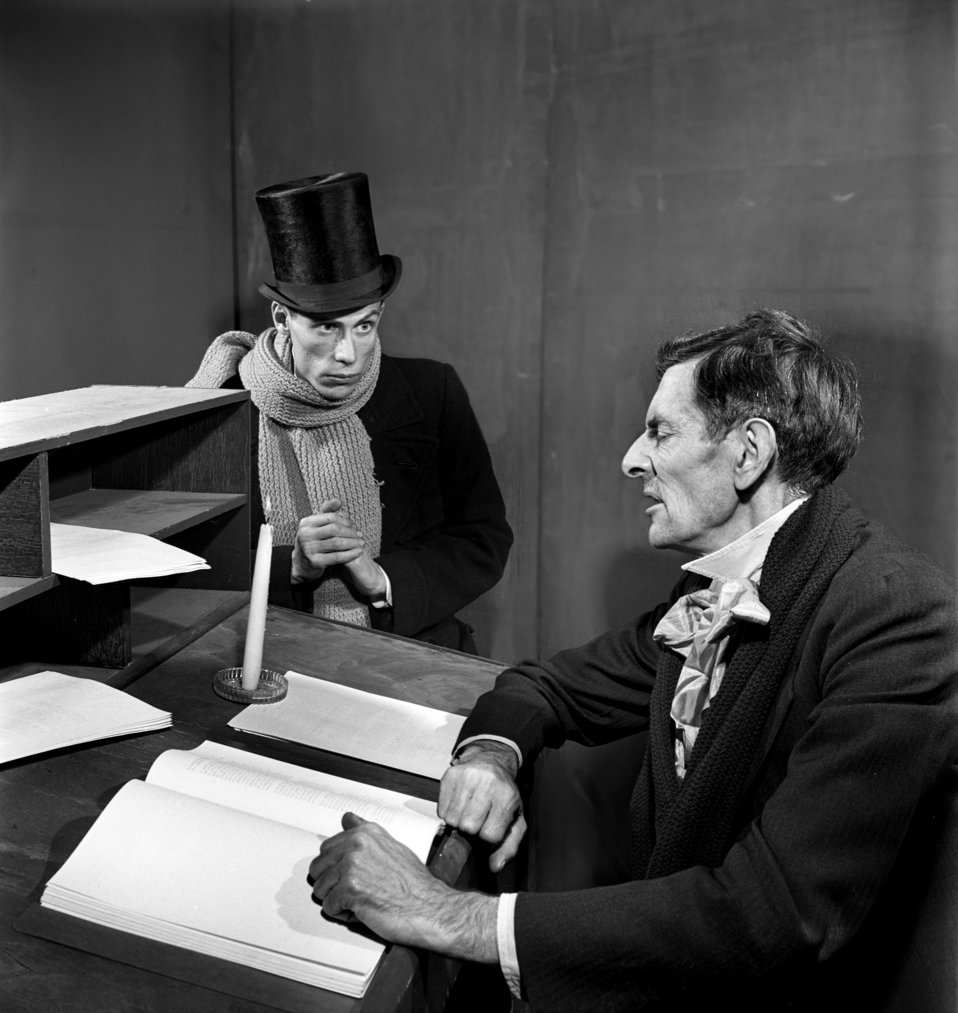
Community Playhouse 'Christmas Carol' Oak Ridge 1947

4067 DOE photo Ed Westcott 12-5-1947 Oak Ridge Tennessee